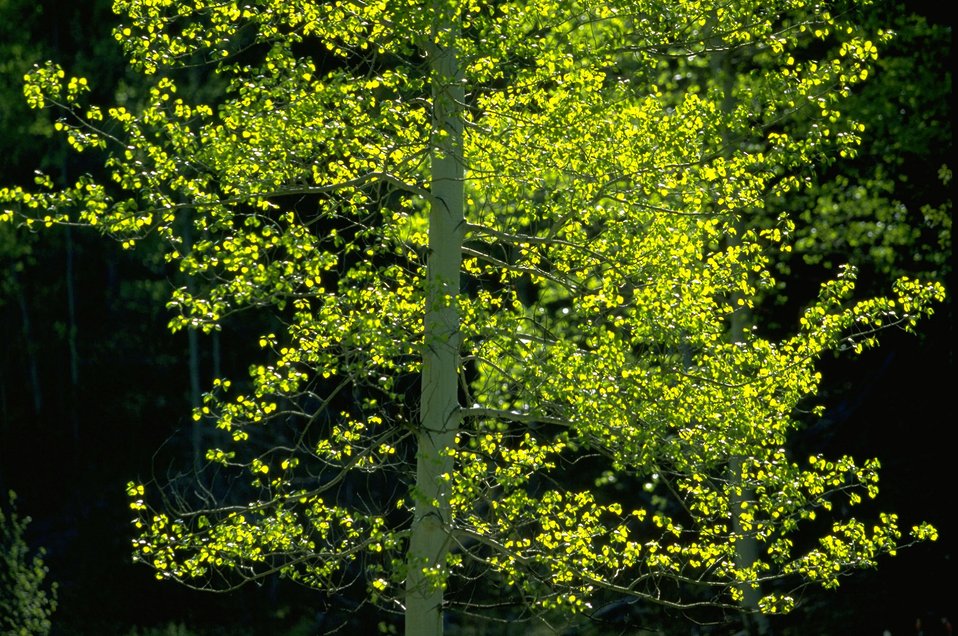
Sun shining on the leaves of an Aspen tree